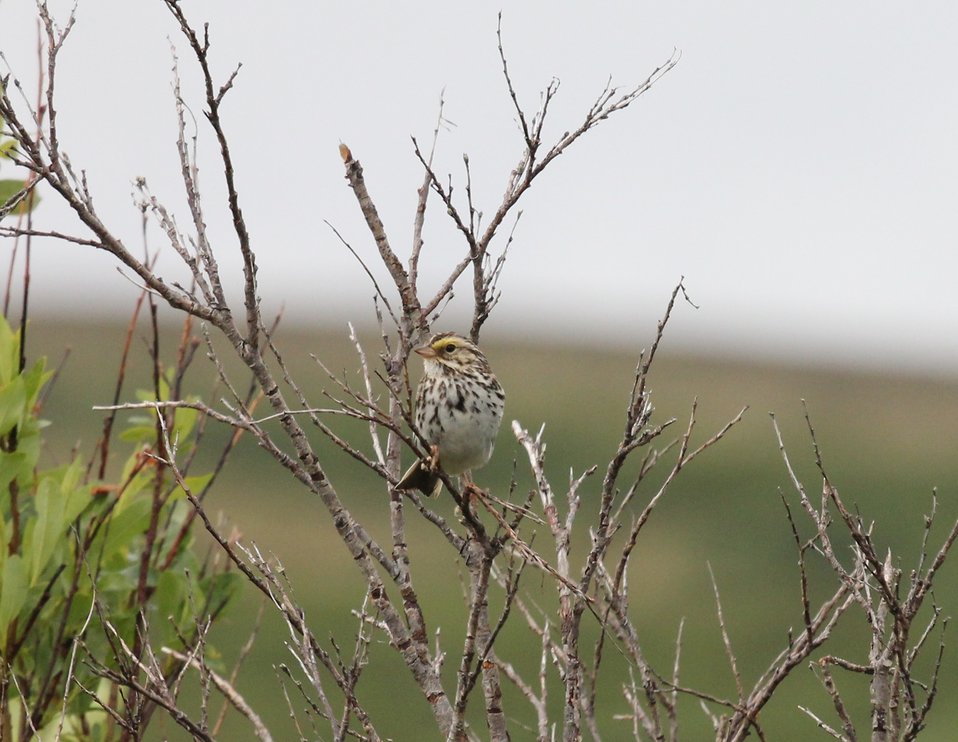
Savannah Sparrow

Andreafsky wilderness, Yukon Delta National Wildlife Refuge